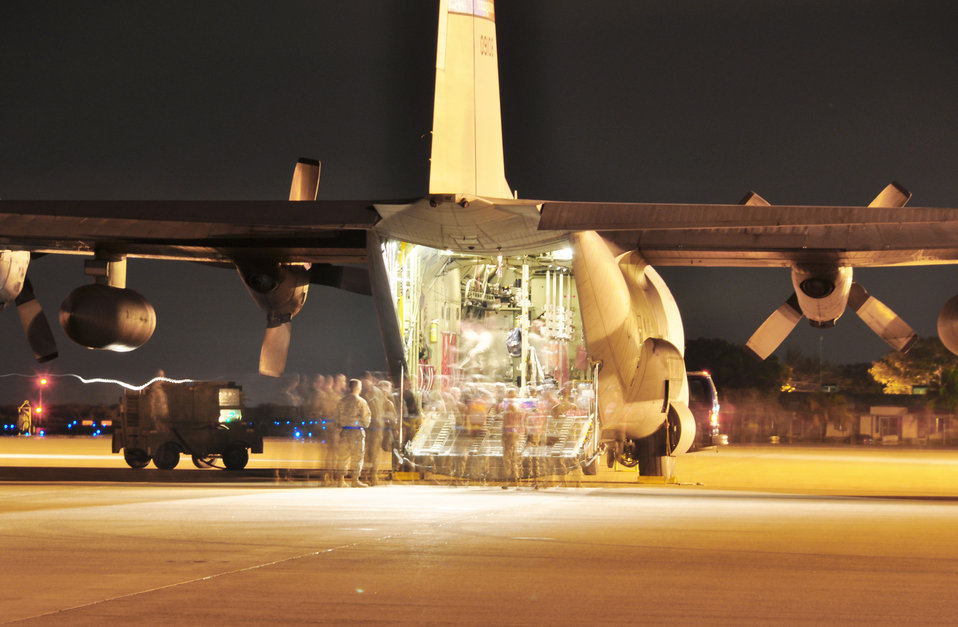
JTF-Bravo deploys medical personnel to support Haiti disaster relief

Members of Joint Task Force-Bravo?s 612th Air Base Squadron prepare one of three C-130 Hercules to carry 23 JTF-B medical element personnel, along with 51,000 pounds of supplies from Soto Cano Air Base, Honduras, to Haiti Jan. 17, 2010. The medical team deployed to join Joint Task Force-Haiti in support of Operation Unified Response, the joint U.S. military disaster relief mission there.